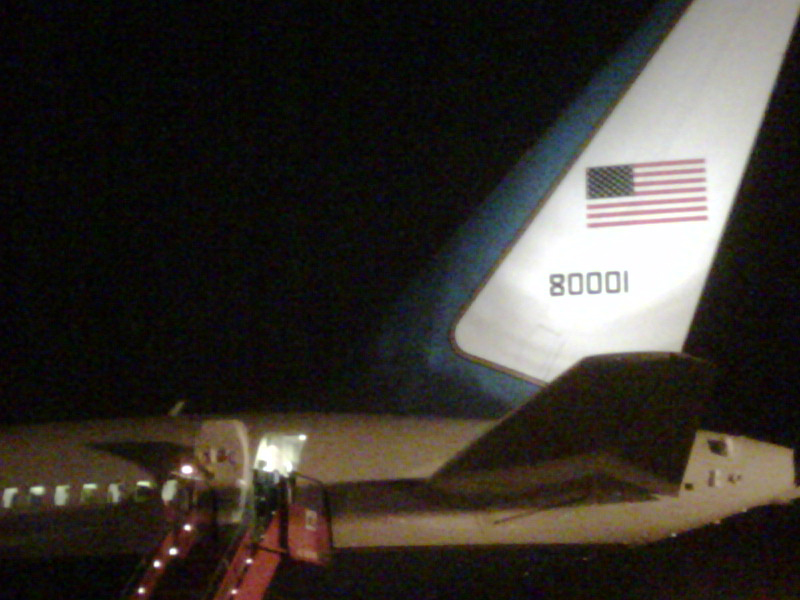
Secretary Clinton's Plane Before Departing for Costa Rica

The plane used by U.S. Secretary of State Hillary Rodham Clinton at an airport in Sao Paulo, Brazil, before leaving for Costa Rica, March 3, 2010.